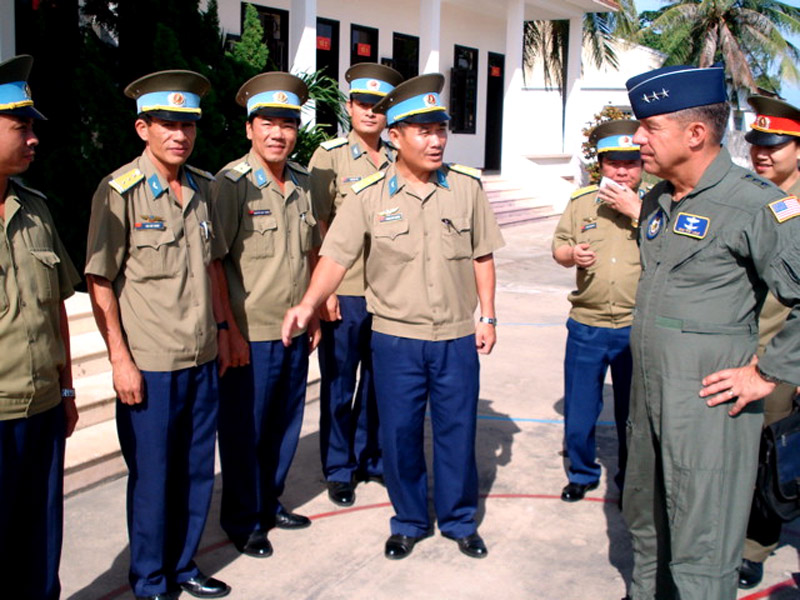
Vietnam visit strengthens military ties

Lt. Gen. Dan Leaf discusses pilot training with staff instructors during a visit to the Vietnamese air force academy at Nha Trang Air Base located in the Khanh Hoa province on the central coast. General Leaf was in Vietnam to meet with military and civilian officials to identify possible future military engagement activities.